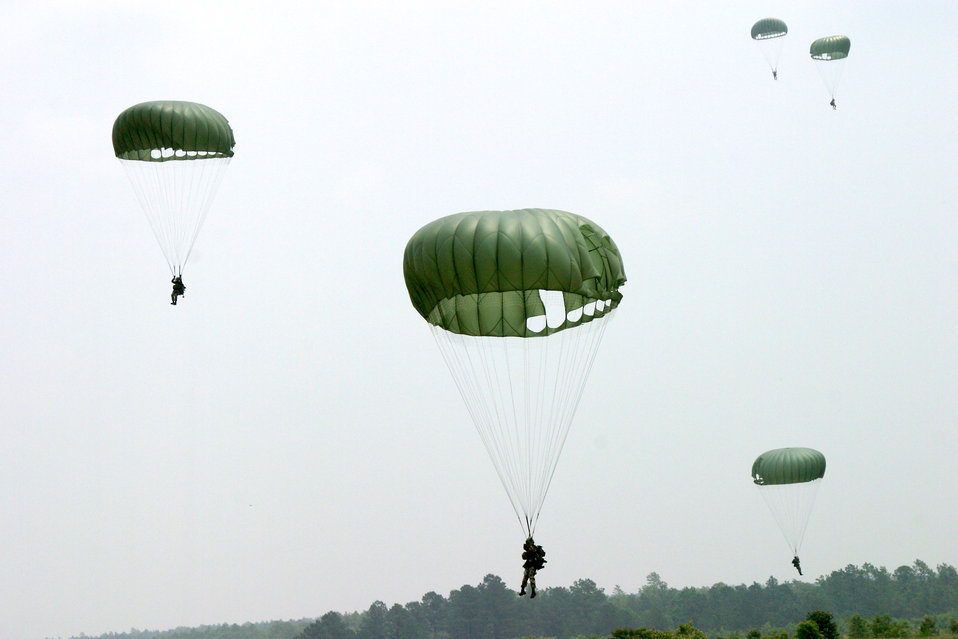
Airmen train to wear scarlet beret

CAMP MACKALL, N.C. -- Combat Control School students practice their parachuting skills as they drop onto a landing zone here as part of a field exercise. All students must meet rigorous standards to graduate the course and earn the right to wear the scarlet beret.